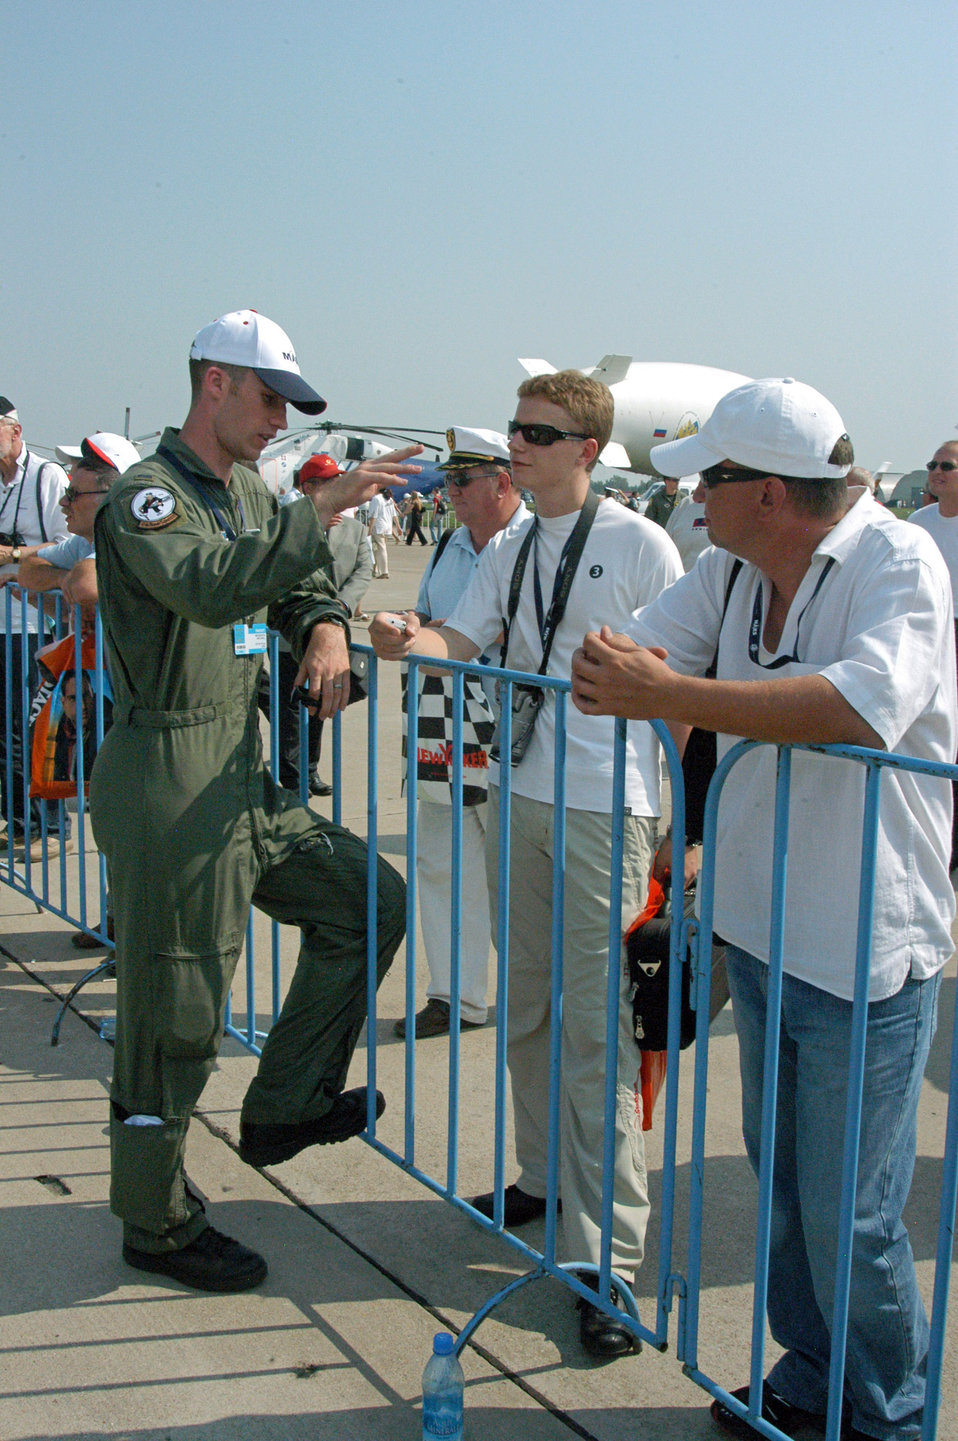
Air Force helps foster American, Russian relations

First Lt. Mike Middents talks with visitors Aug. 22 during the Moscow International Air Show at Ramenskoye Airfield in Zhukovsky, Russia. The air show runs through Aug. 26. Lieutenant Middents is assigned to the 2nd Bomb Wing at Barksdale Air Force Base, La.